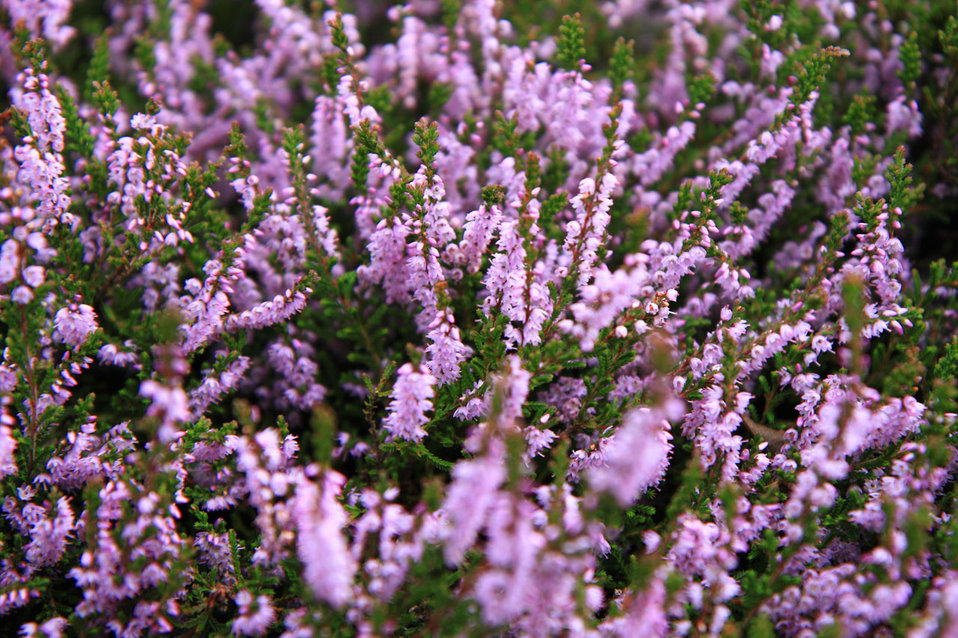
Heather background.